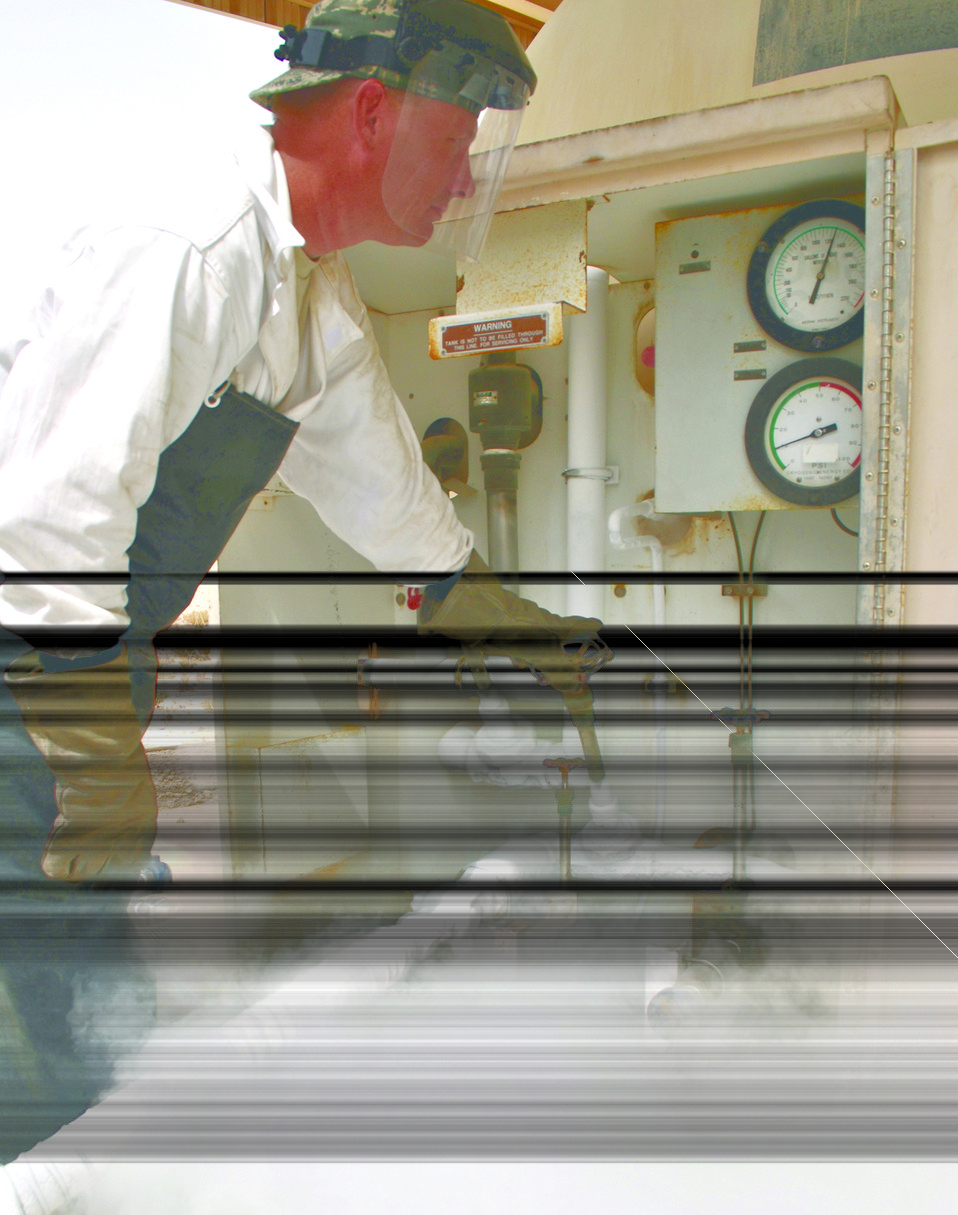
A cold spot in the desert

Tech. Sgt. Marty Phillips checks the pressure on a liquid oxygen tank at an air base in Southwest Asia recently. Sergeant Phillips is a cryogenics technician with the 379th Expeditionary Logistics Readiness Squadron. The cryogenics shop receives up to 9,200 gallons of cryogenic fuel a week.